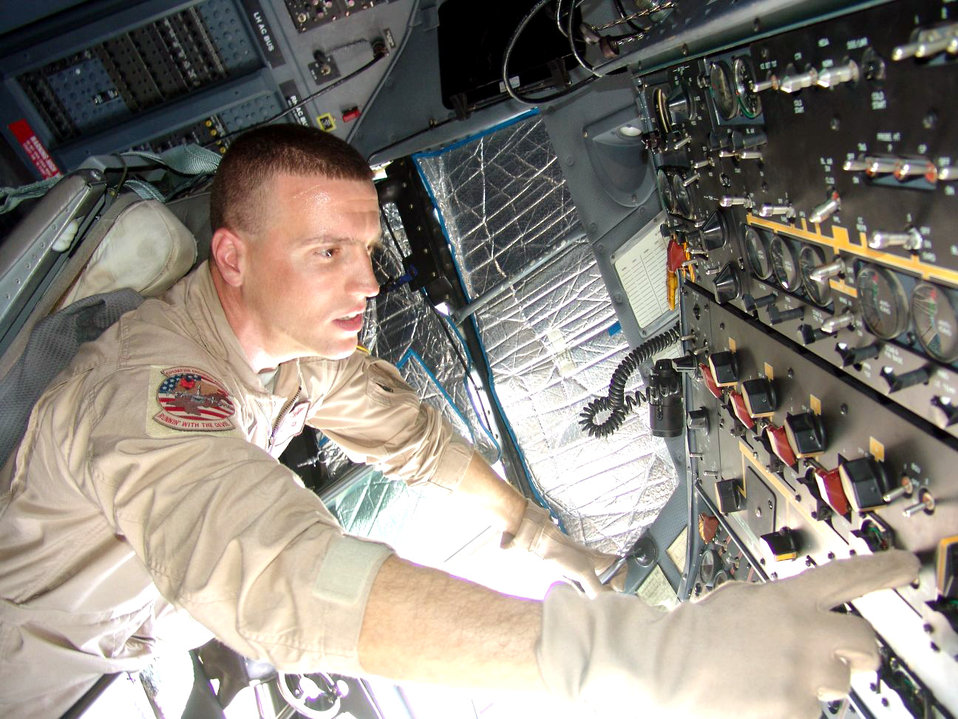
On deck

SOUTHWEST ASIA -- Tech. Sgt. John Plaquet conducts a preflight inspection inside a C-130 Hercules flight deck. He is an instructor flight engineer with the 738th Expeditionary Airlift Squadron at a forward-deployed location and is from Little Rock Air Force Base, Ark.